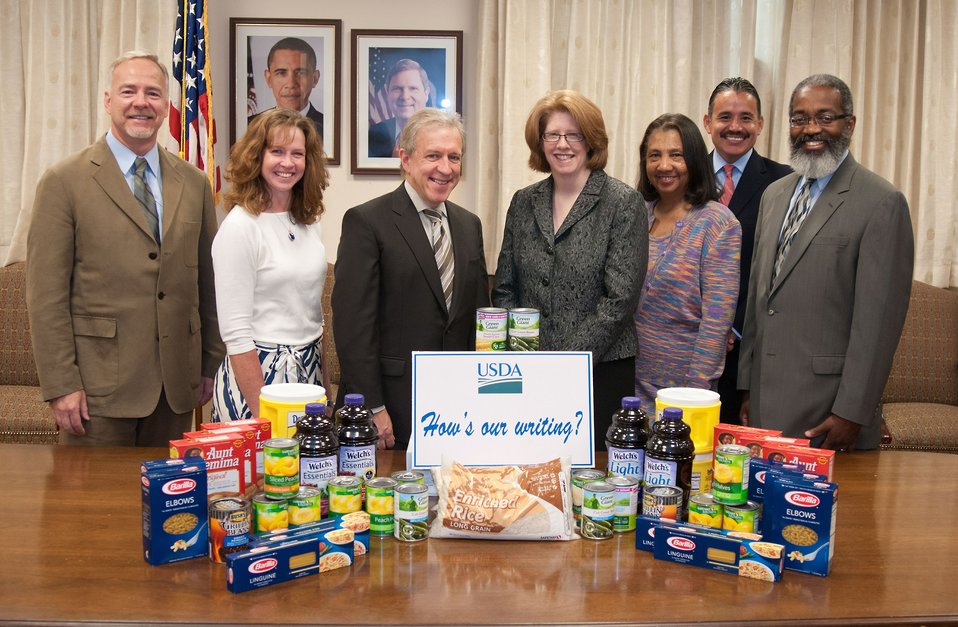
The U.S. Department of Agriculture (USDA) recently received an “A” on a report card from the Center for Plain Language a non-profit group that monitors the Plain Writing Act of 2011. USDA was the only government agency that received an “A” for all documents, new and revised since the Plain Writing act became law, October 2011. The Plain Writing Committee wagered what grade USDA would receive and the losers of the wager were to donate 25 pounds of food each to the USDA Feds Feed Families food drive. The donation was displayed in the Departmental Management conference room in Washington, DC Monday, July 23, 2012. (L to R Terry Bish, Public Affairs Specialist, Natural Resources Conservation Service, Beth Gaston, Animal and Plant Health Inspection Service, Jerry Mande, Deputy Under Secretary, Food Safety Inspection Service and Senior Official for Plain Writing, Suzanne Austin-Kashawlic, Employee Relations Specialist, Natural Resources Conservation Service, Associate Assistant Secretary for Administration Dr Alma Hobbs, Oscar Gonzales, Deputy Assistant Secretary for Departmental Administration and Dr. Gregory Parham, Assistant Secretary for Departmental Administration (not pictured James Gore, Deputy Chief, Natural Resources Conservation Service.)